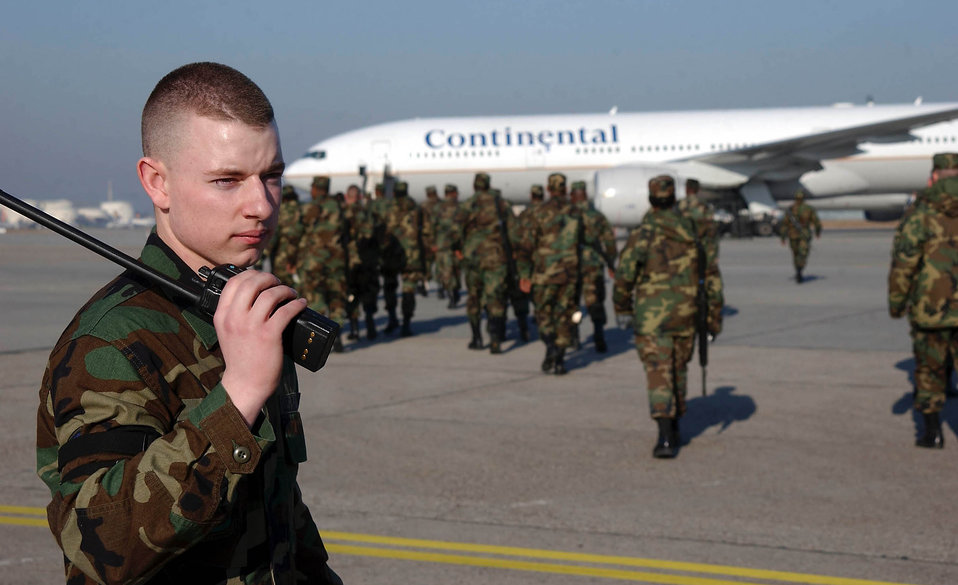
Planes, troops flood through Rhein-Main

RHEIN-MAIN AIR BASE, Germany -- Airman 1st Class Trapper Green directs soldiers bound for Kuwait onto a commercial airliner at Rhein-Main Air Base, Germany. Green is with the base's 726th Air Mobility Squadron, which handles more passengers than any U.S. military base in Europe.